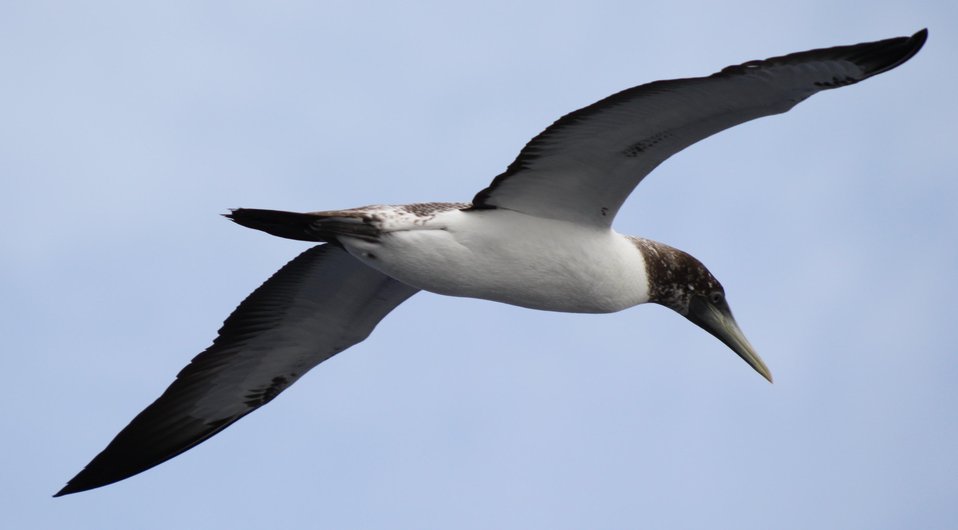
Juvenile masked booby in flight